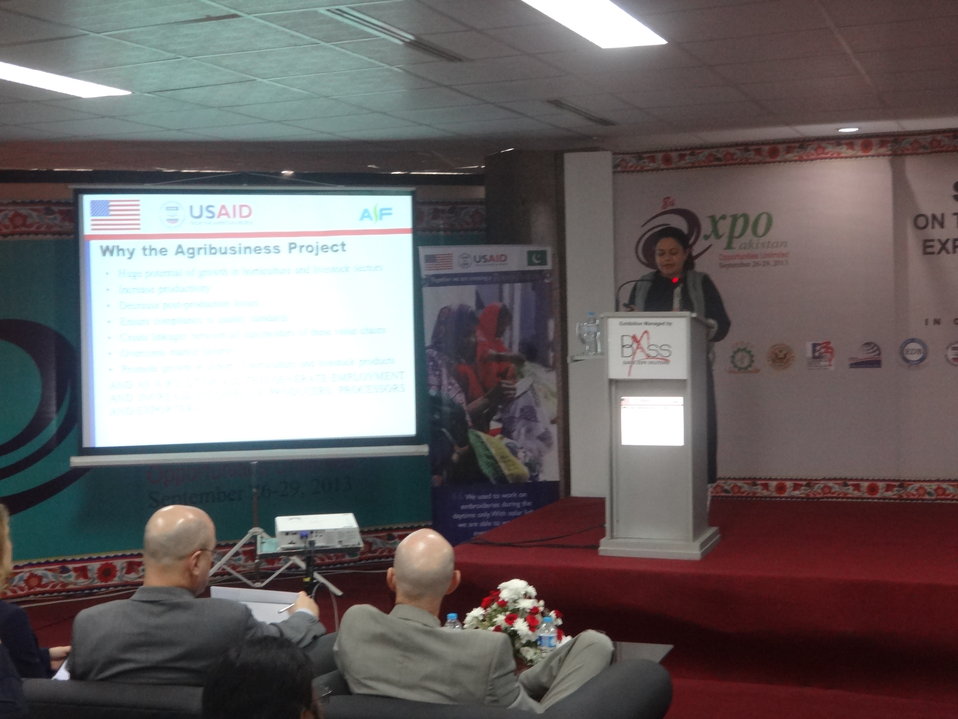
The Agribusiness Project, Presentation at Conference, TDAP Expo, Karachi, September 27, 2013 (11)